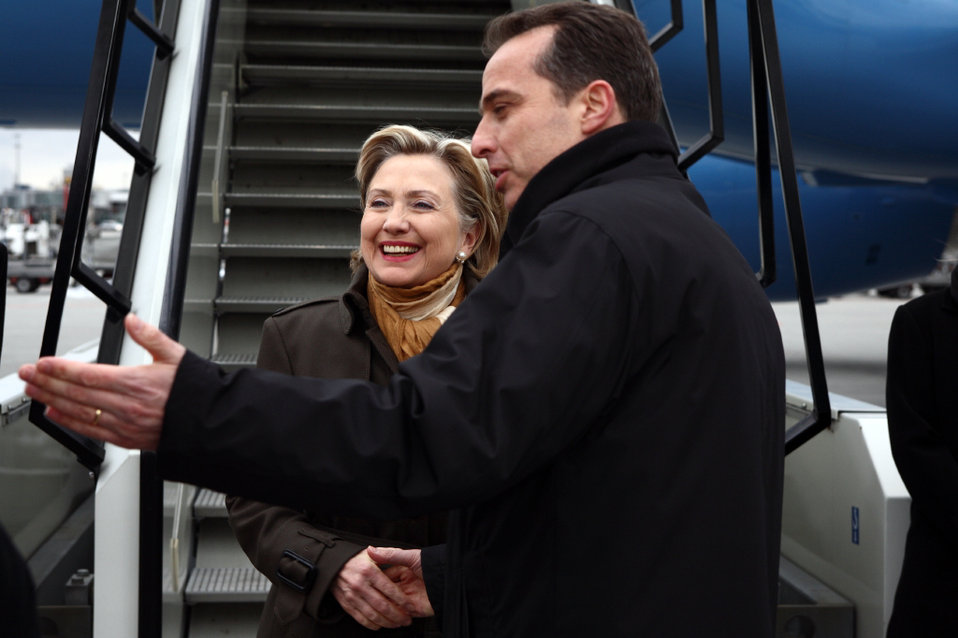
Arrival in Geneva, Switzerland

U.S. Secretary of State Hillary Rodham Clinton arrives in Geneva, Switzerland March 6, 2009.